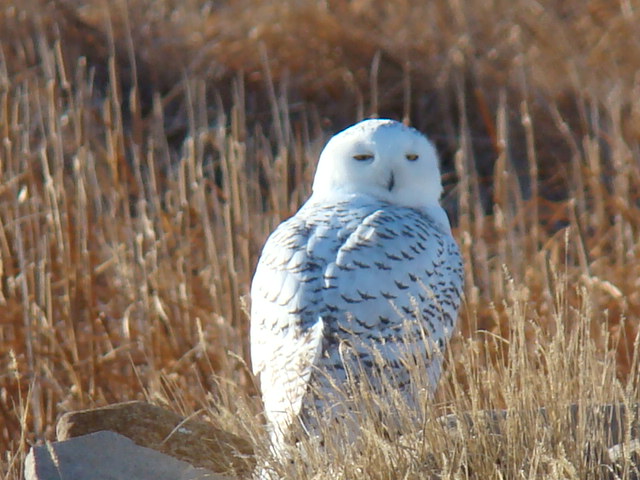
Snowy Owl

Every winter we get at least one really great Snowy Owl sighting on the Refuge!